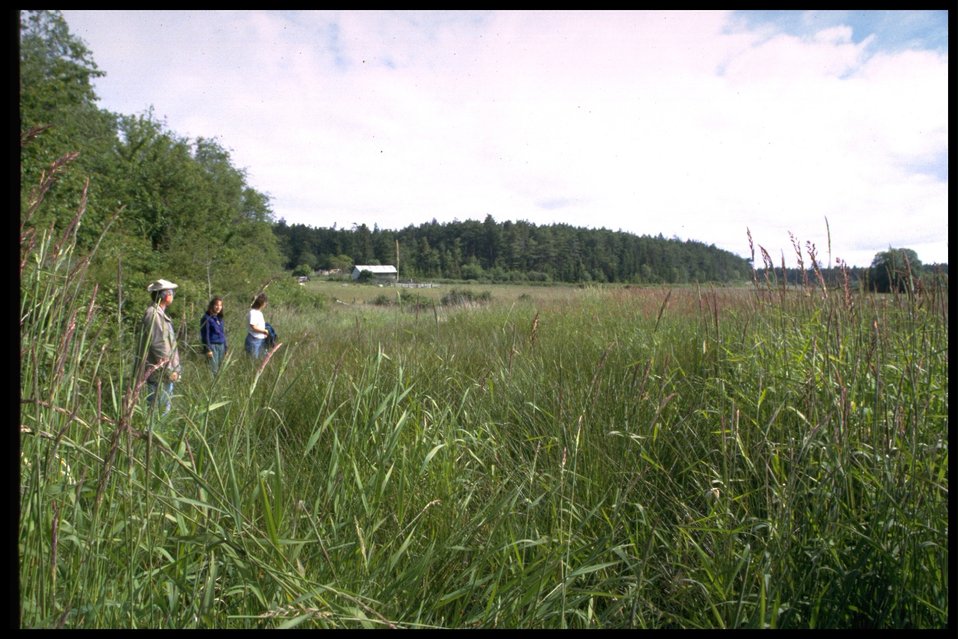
Jim Fisher, Diane Preibe, and Pam Camp at Chadwick Hill Marsh.